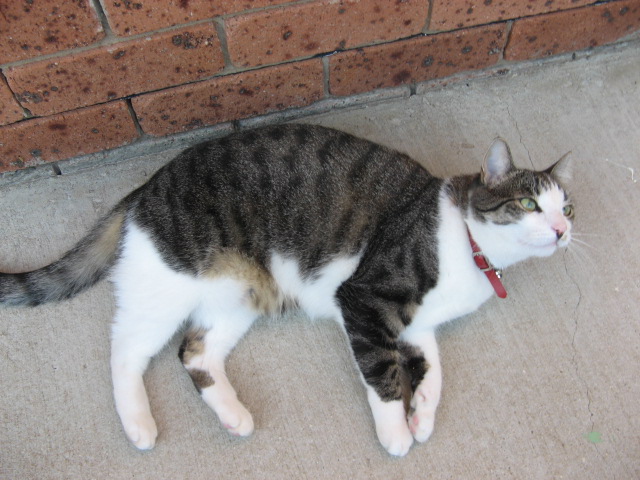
Tinkerbell cat